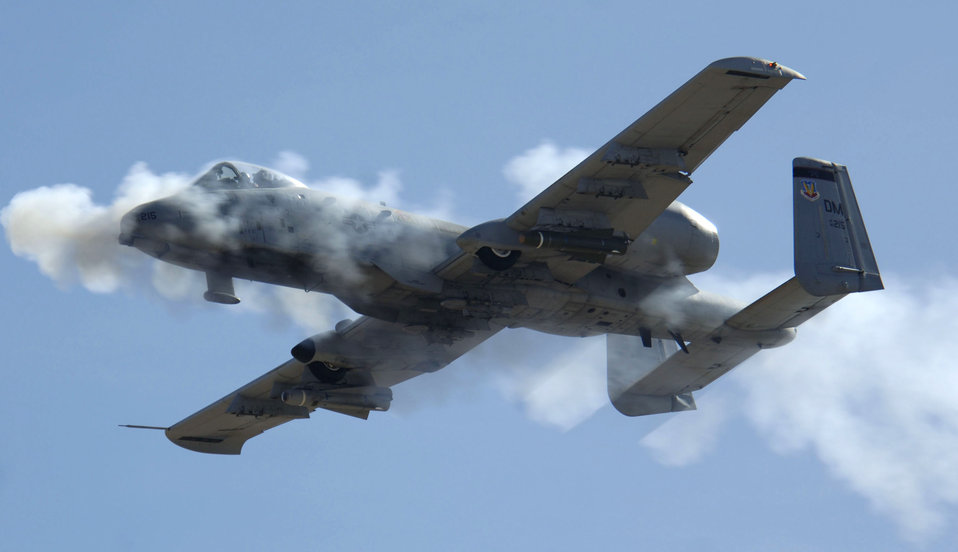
Thunder alley

An A-10 Thunderbolt II fires its 30mm gun at a low-angle strafe as part of the 2006 Hawgsmoke competition, Thursday, March 23, 2006, at the Barry Goldwater Range, Gila Bend Air Force Auxiliary Field. There are four parts of the competition. Each team has four members in which they have 100 bullets each to use toward the target. This year's competition coincides with the 30th anniversary of the